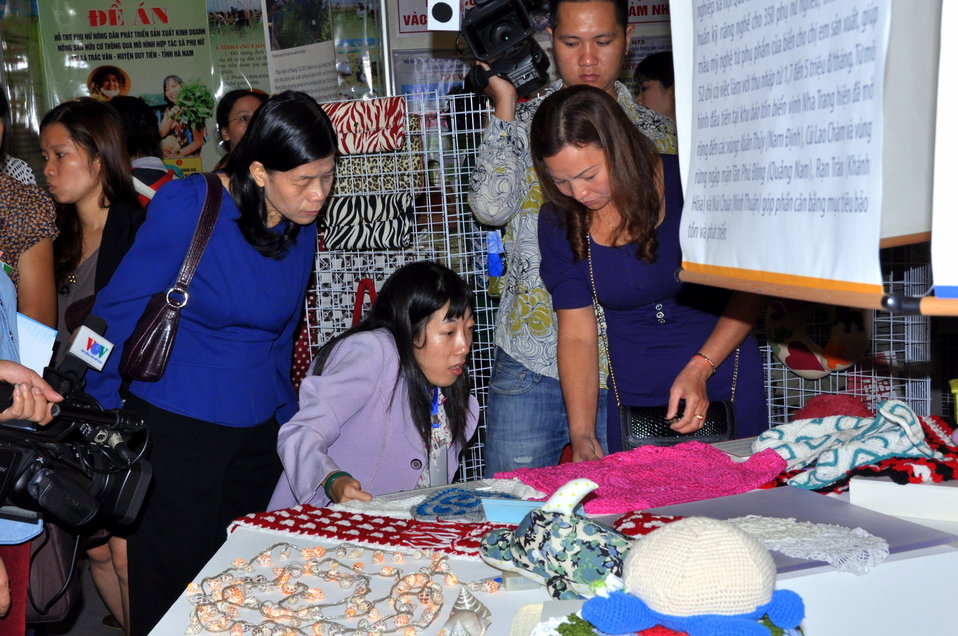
Vietnam Women Innovation Day 2013

Hanoi, October 1, 2013.